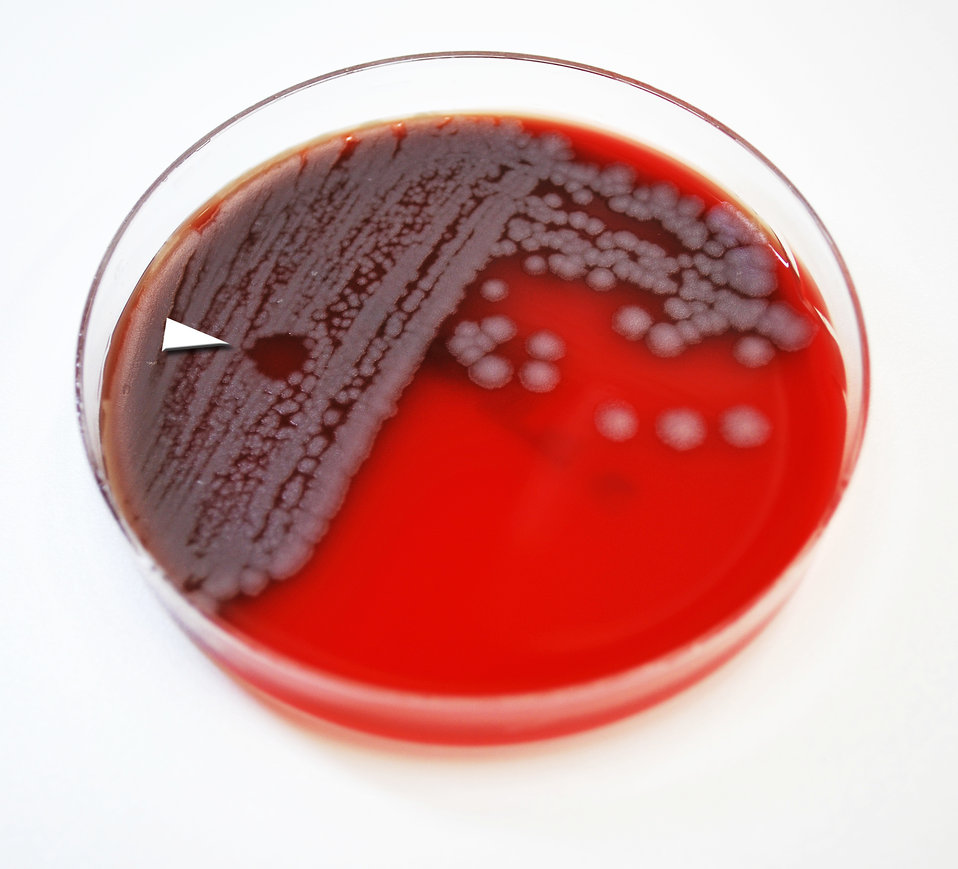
This image depicted numbers of Bacillus anthracis bacterial colonies, which had been allowed to grow on sheep's blood agar (SBA) for a 24 hour period. In this particular view you'll note the appearance of what is termed a "plaque" (arrowhead), which represents an area where the bacteria had been lysed, or destroyed by the application of a localized amount of gamma phage-containing solution. Highly specific to B. anthracis, these gamma phage viruses, i.e., bacteriophages, attacked the B. anthracis bacteria, subsequently leaving this circular plaque devoid of bacterial organisms. The specificity of these gamma phages to B. anthracis makes this a positive test for the presence of this bacterium.